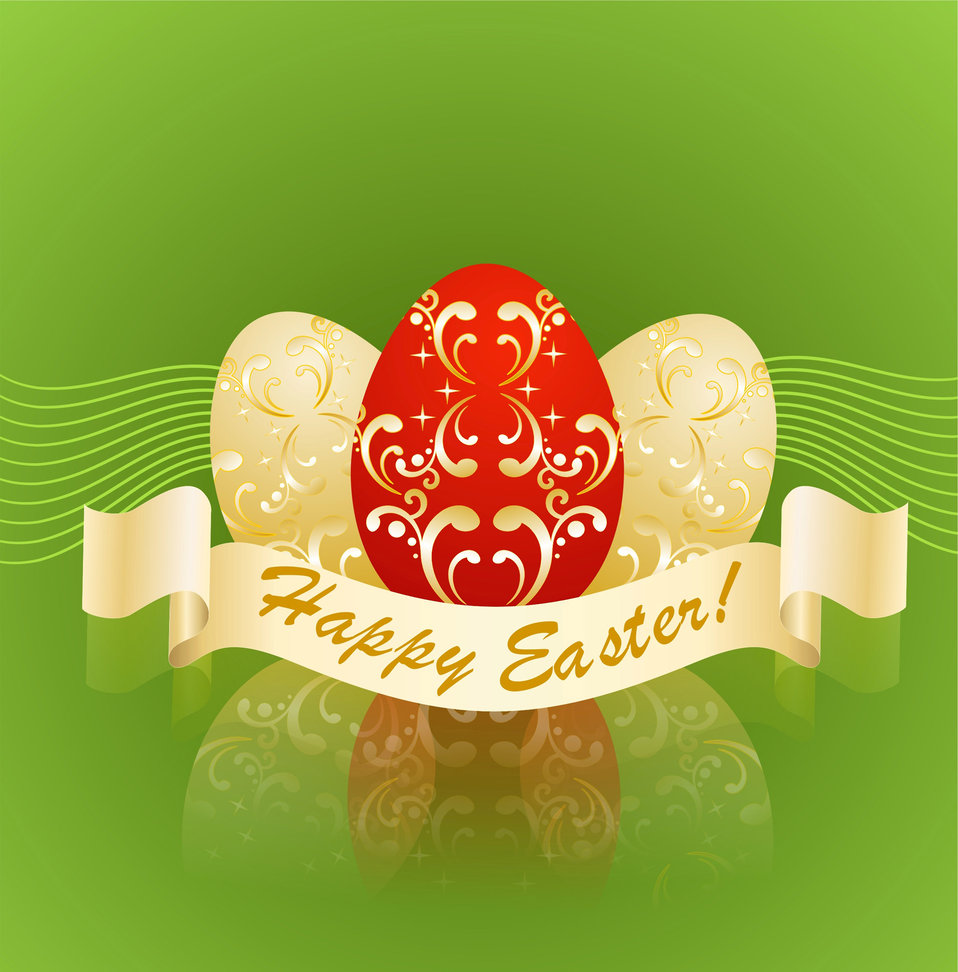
Happy easter!

Congratulation to easter..